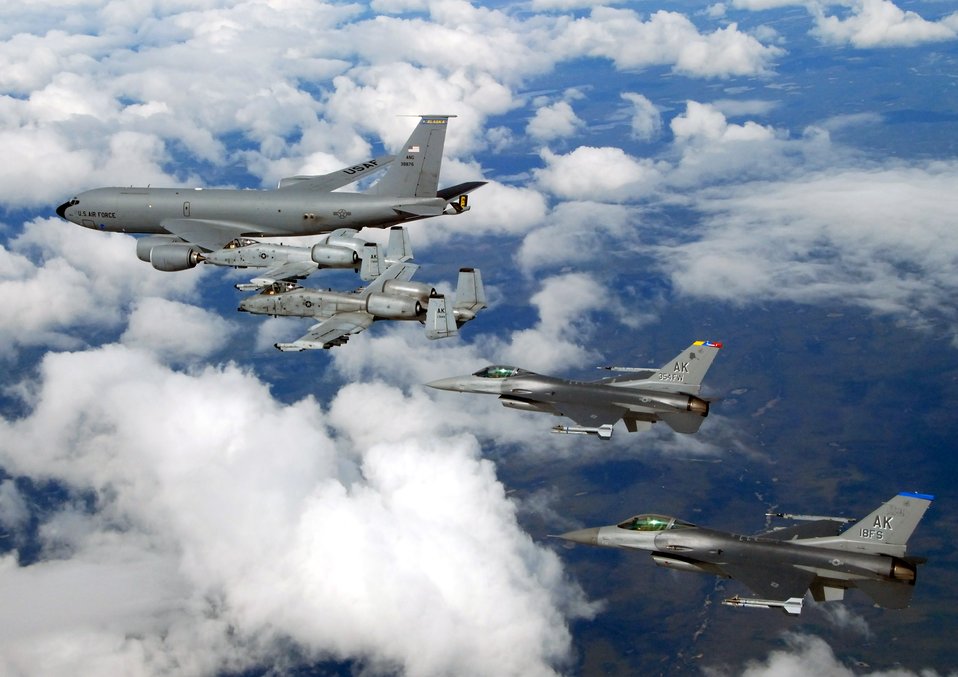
Final flight for fighters

A KC-135 Stratotanker with the Alaska Air National Guard's 168th Air Refueling Wing flies with two F-16 Fighting Falcons from the 18th Fighter Squadron and two A-10 Thunderbolt IIs from the 355th Fighter Squadron May 29 over Alaska. The five aircraft assigned to Eielson Air Force Base, Alaska, flew in formation for the last time due to the deactivation of the 18th and 355th Fighter Squadrons.